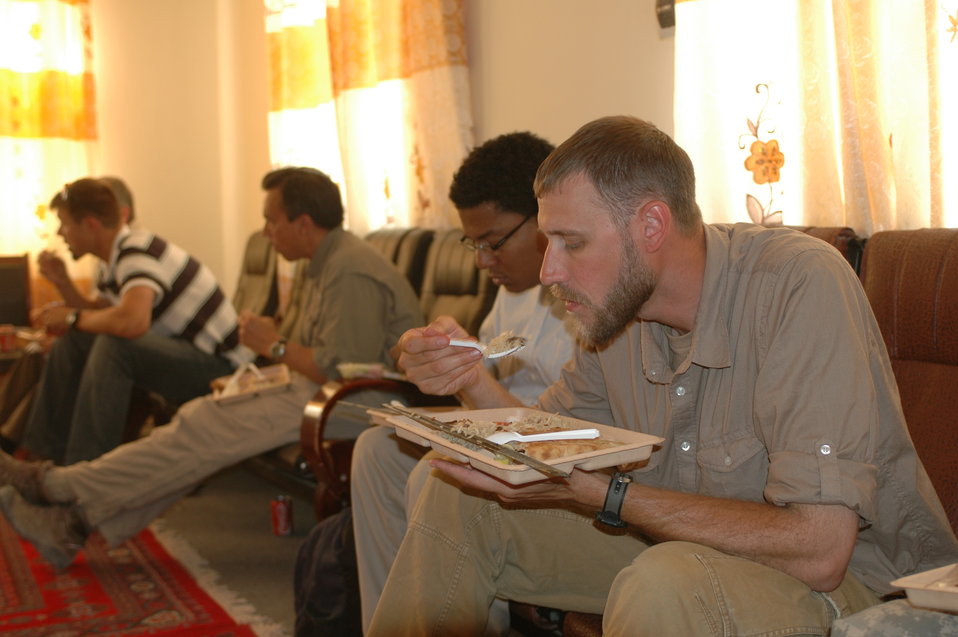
Dr Shah Visits Argandab April 10, 2010